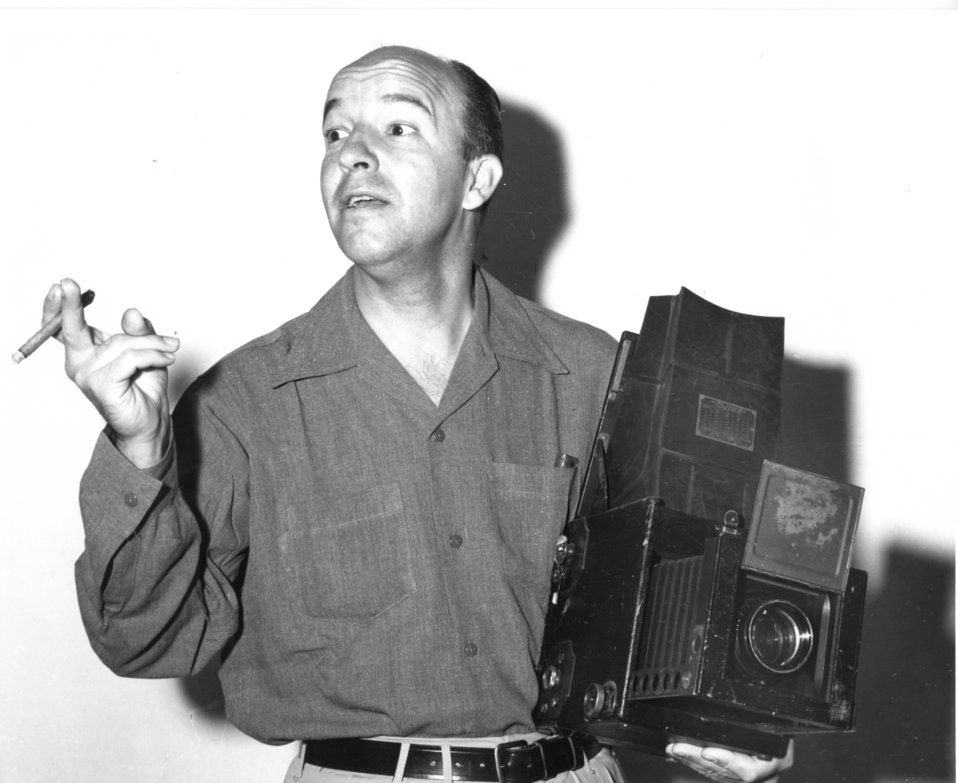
Notable persons at Oak Ridge